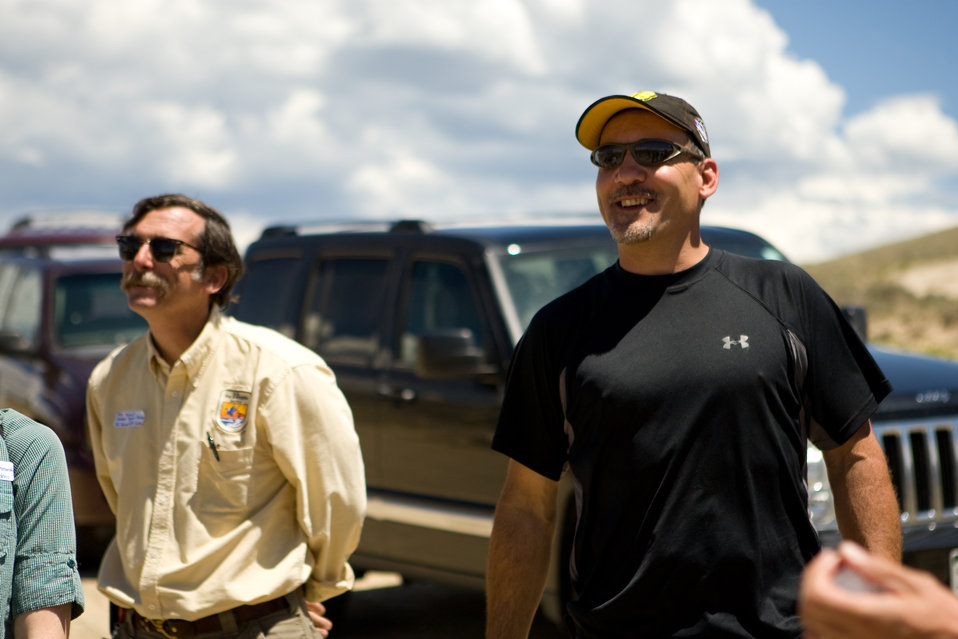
Colorado Rare Plant Conservation Initiative

The Colorado Rare Plant Conservation Initiative (RPCI) is a partnership of 23 statewide and regional agencies, private organizations, and academic institutions working to conserve 121 rare plants in Colorado. As part of these efforts the group developed the Colorado Rare Plant Conservation Strategy, developed Best Management Practices to reduce energy development impacts, addressed climate change, and developed focused strategies for the conservation of individual species at eight priority landscapes. The group has also worked to coordinate volunteer efforts for plant conservation across the state.